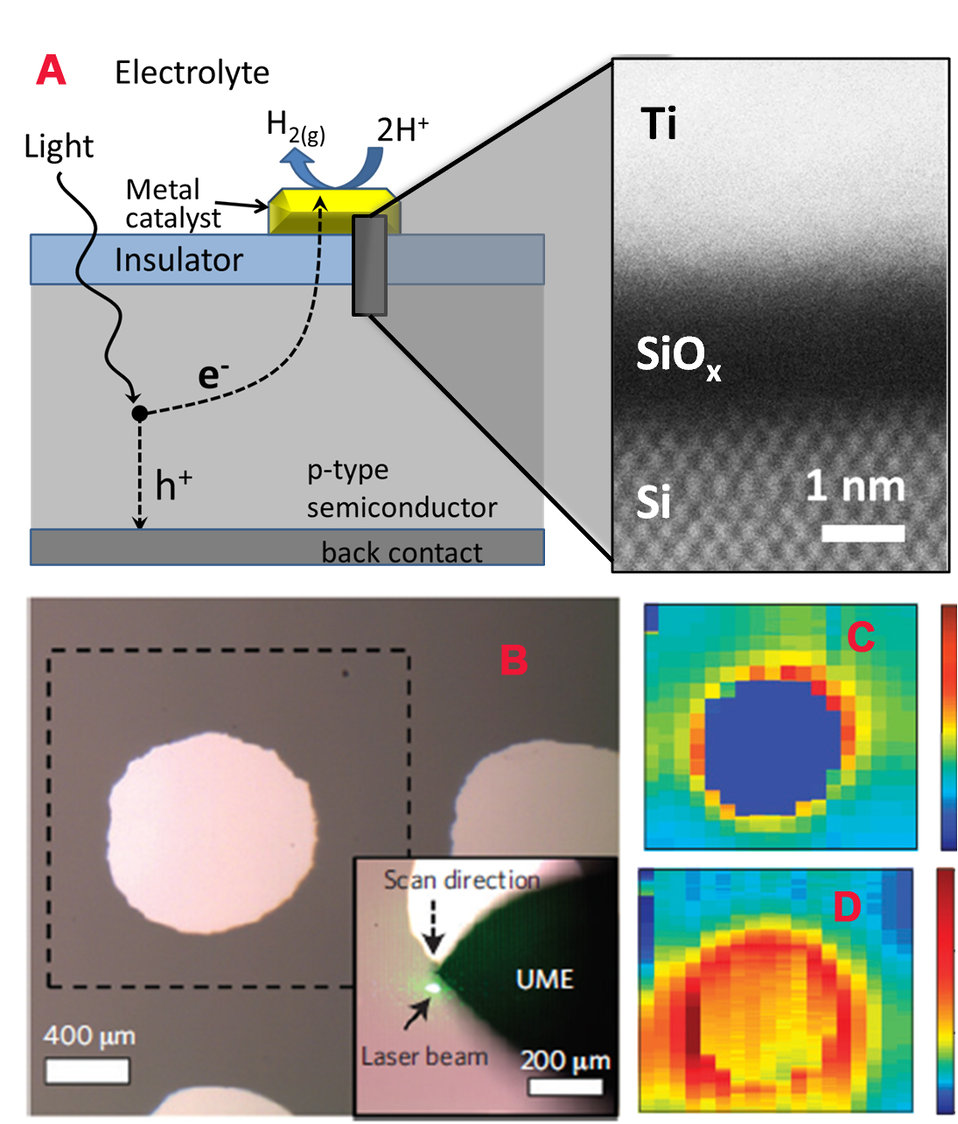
Photoelectrochemical Hydrogen Cell

Multiple views of NIST's photoelectrochemical hydrogen cell. Side schematic [A] shows princial components of the cell. Electrodes on the top are titanium toped with platinum. An incoming photon generates a electron (e) and hole (h). Microscope image [B] shows top of the cell surface with cylinderical electrodes and scanning laser beam. Photo-current scan [C] shows relatively high current around the base of the electrodes, while the electrochemical scan [D] shows a complex pattern of hydrogen generation on and around the electrode.